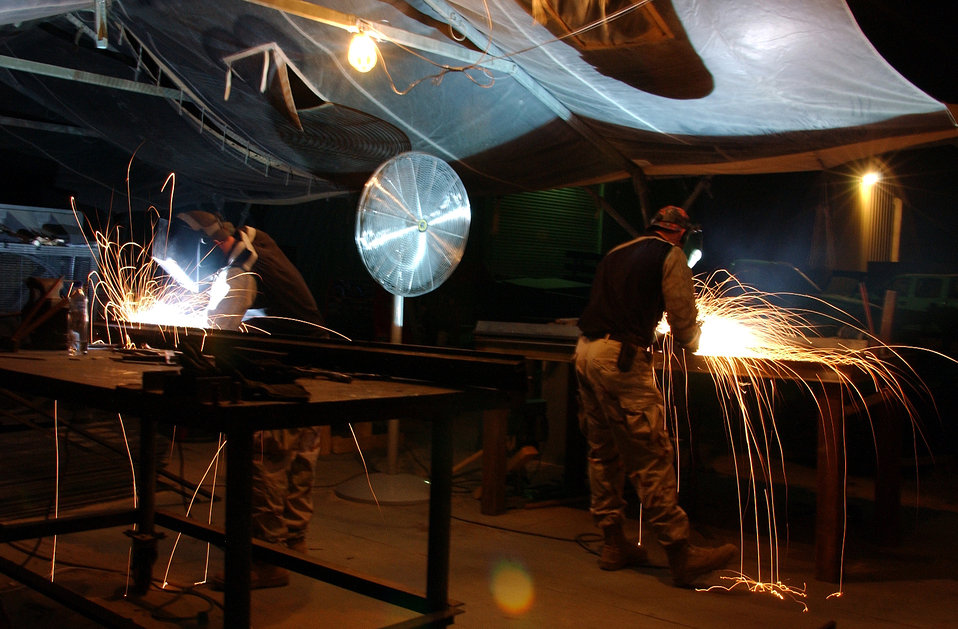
Welding

OPERATION IRAQI FREEDOM -- Staff Sgt. Trevor Makin and Airman 1st Class Joshua McDowell weld brackets for a munitions and storage container. The airmen are deployed from Malmstrom Air Force Base, Mont., to the 332nd Expeditionary Civil Engineer Squadron at a forward-deployed location supporting Operation Iraqi Freedom.